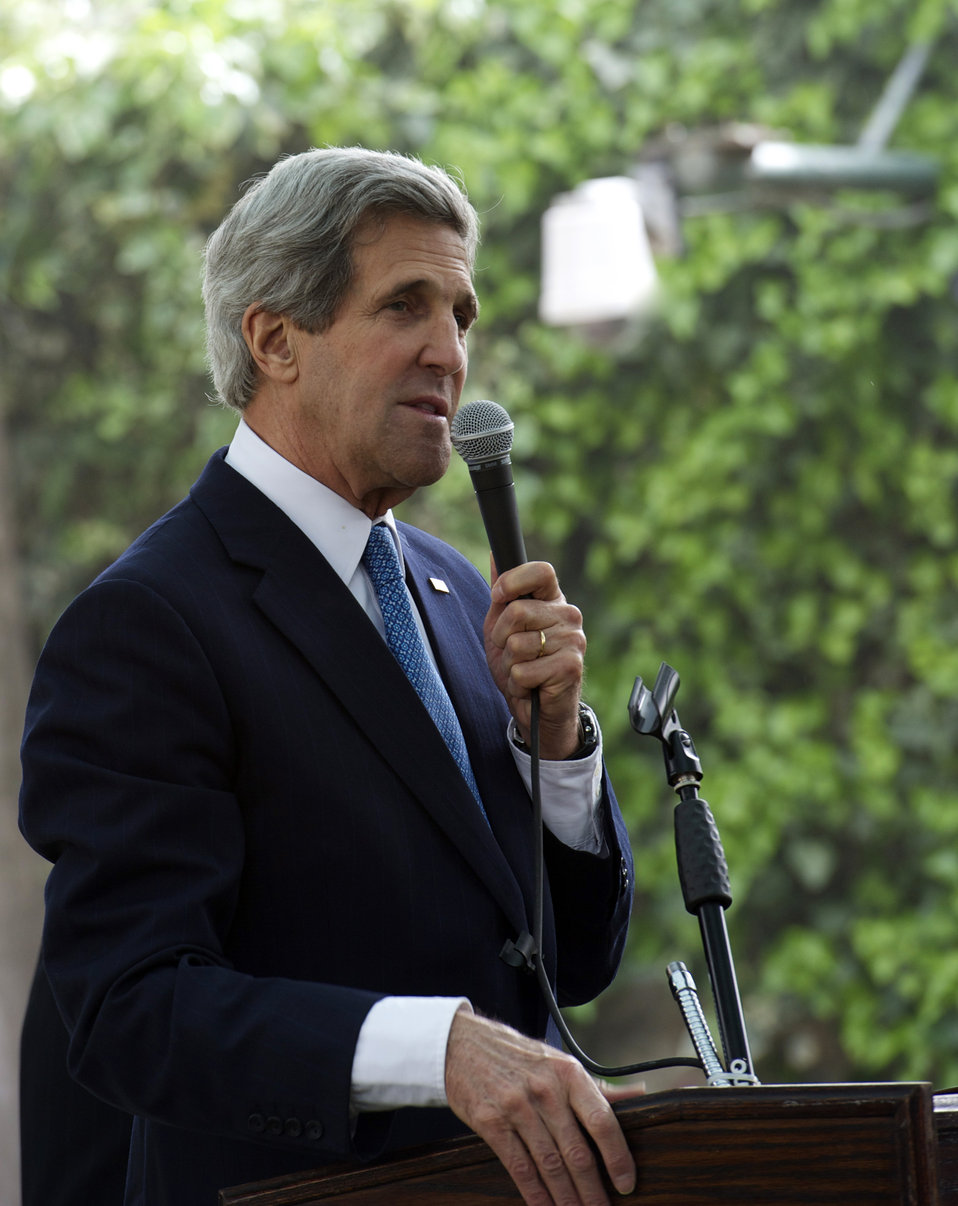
Secretary Kerry Addresses Consulate Jerusalem Staff and Families

U.S. Secretary of State John Kerry addresses the staff and families at the U.S. Consulate General in Jerusalem on April 8, 2013.